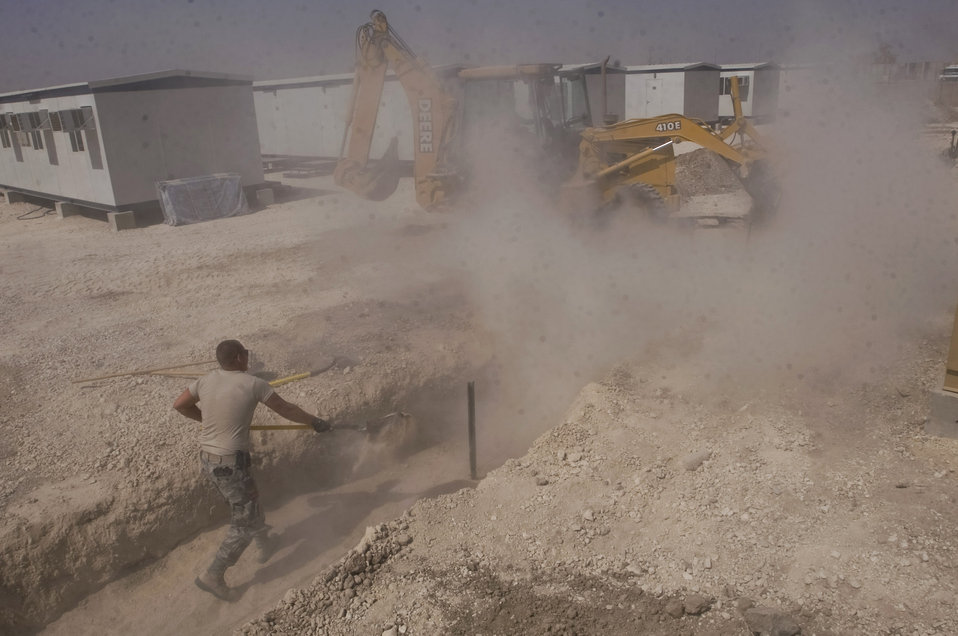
Breaking ground

At Ali Base, Iraq, Staff Sgt. Trevor Petersma levels sand as it is poured into a trench Aug. 15. The 407th Expeditionary Civil Engineer Squadron is rerouting the power supply, and laying water and sewage systems in the transition from base tents to trailers. Sergeant Petersma is a utilities systems craftsman with the 407th ECES.